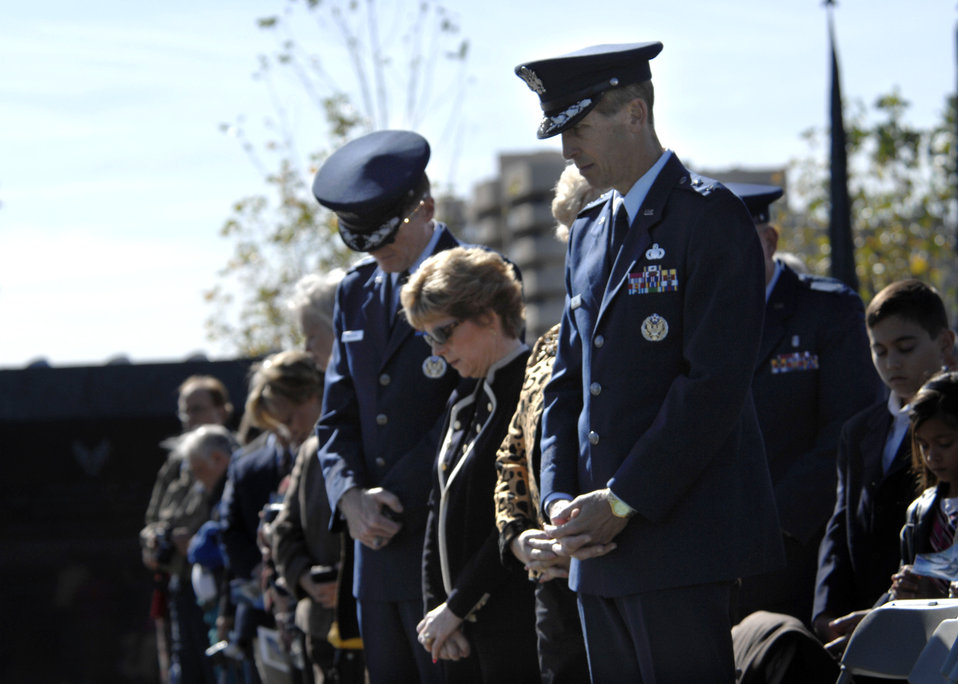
Wreath Ceremony

Heads are bowed and hands are crossed during the opening prayer of the Wreath Ceremony held at the base of the new Air Force Memorial in Arlington, Va., Oct. 15, 2006. Secretary of the Air Force Michael W. Wynne officially closed the Air Force Memorial commemoration by leading the wreath laying ceremony.